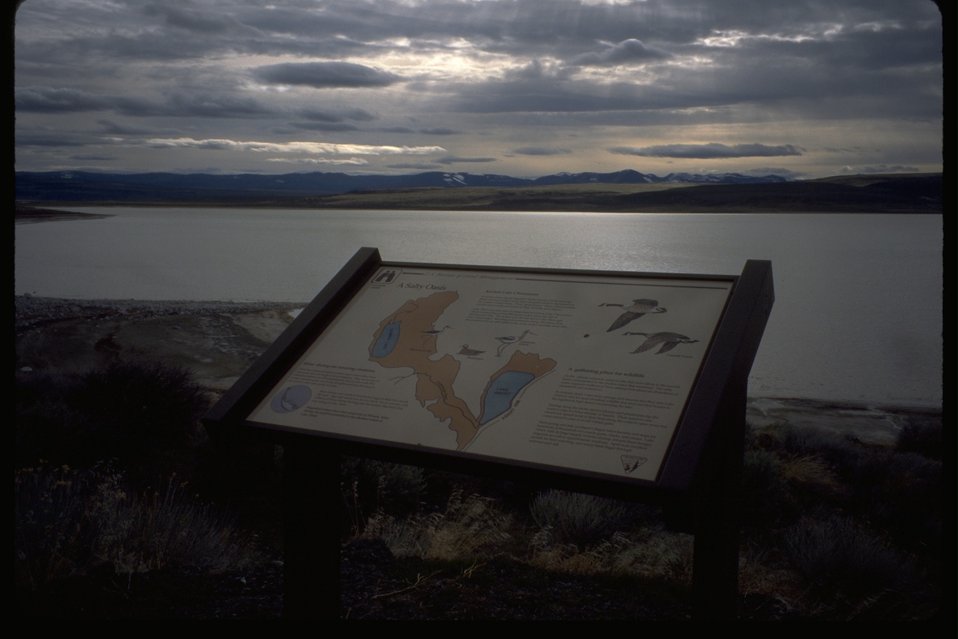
Abert Lake Watchable Wildlife interpretive panel.